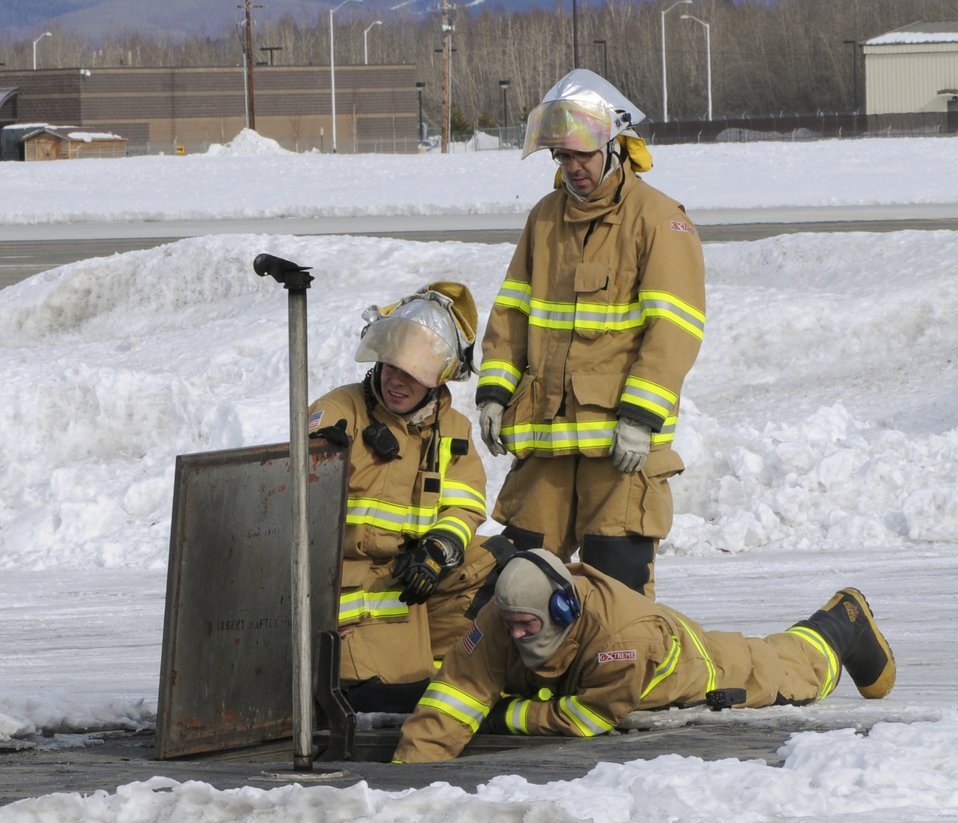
F-16 uses emergency break

Airmen with the base fire department watch the arresting cable wind into place, March 25, 2009, Eielson Air Force Base, Alaska. The generators that wind the cable work quickly to resume normal runway operations.